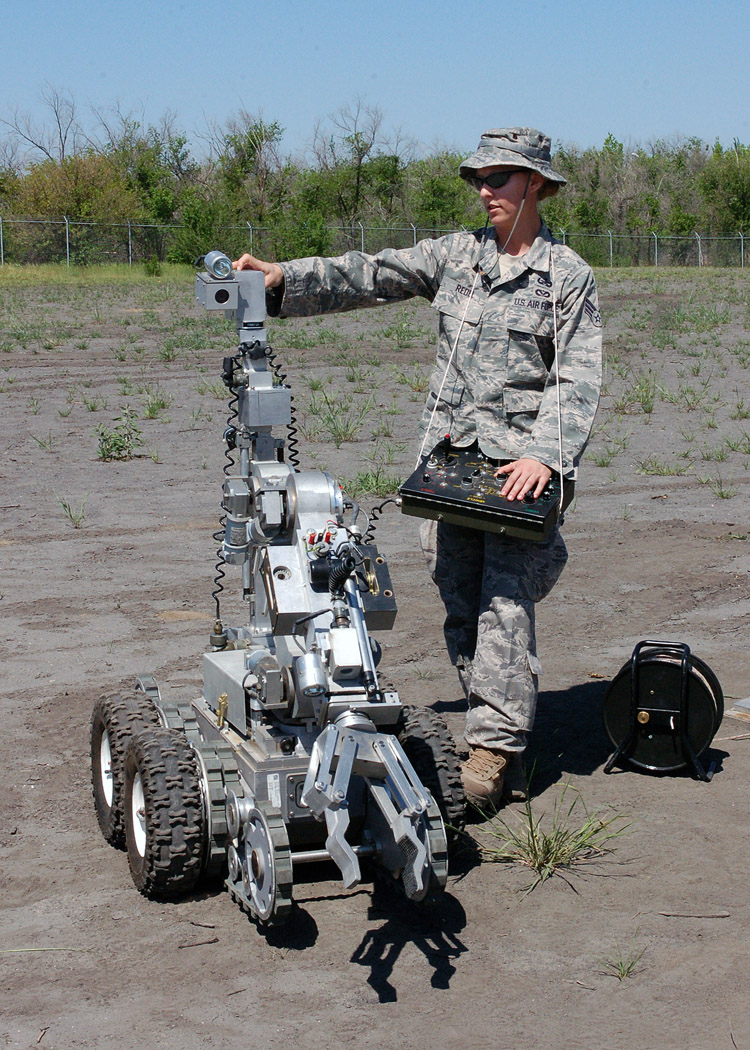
Bombs away!

Senior Airman Rachel Redel demonstrates how an F6A robot works May 12 during an explosive ordnance disposal demonstration at Manas Air Base, Kyrgyzstan. The robot is used by the EOD flight for exploration of suspicious items. Airman Redel is assigned to the 377th Mission Support Group at Kirtland Air Force Base, N.M.